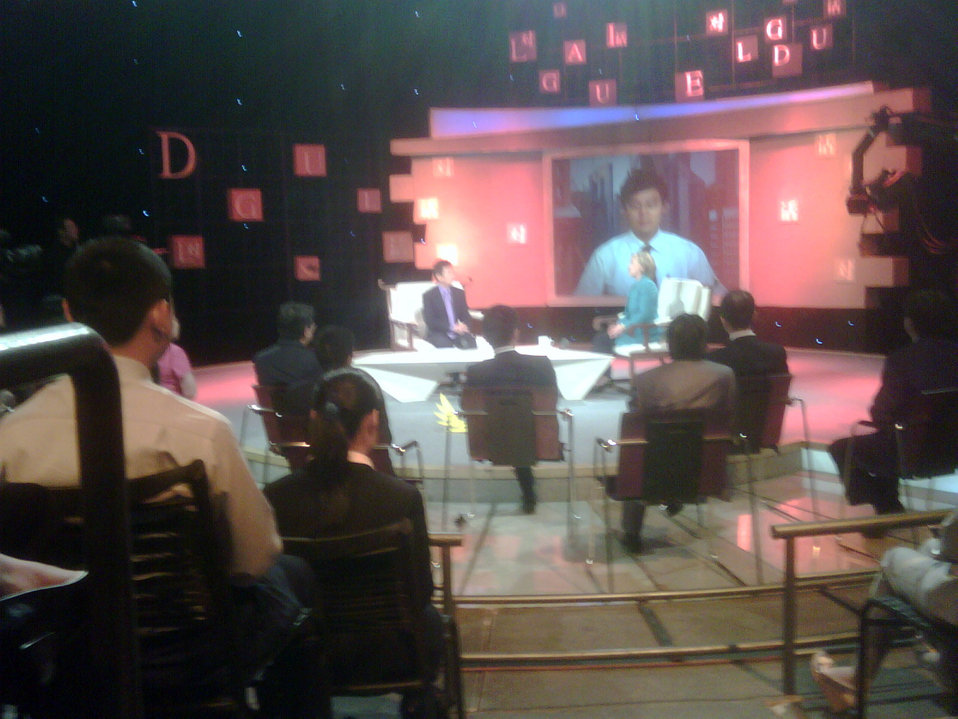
Secretary Clinton Interview on CCTV

U.S. Secretary of State Hillary Rodham Clinton participates in an interview with CCTV in Beijing, China May 25, 2010.